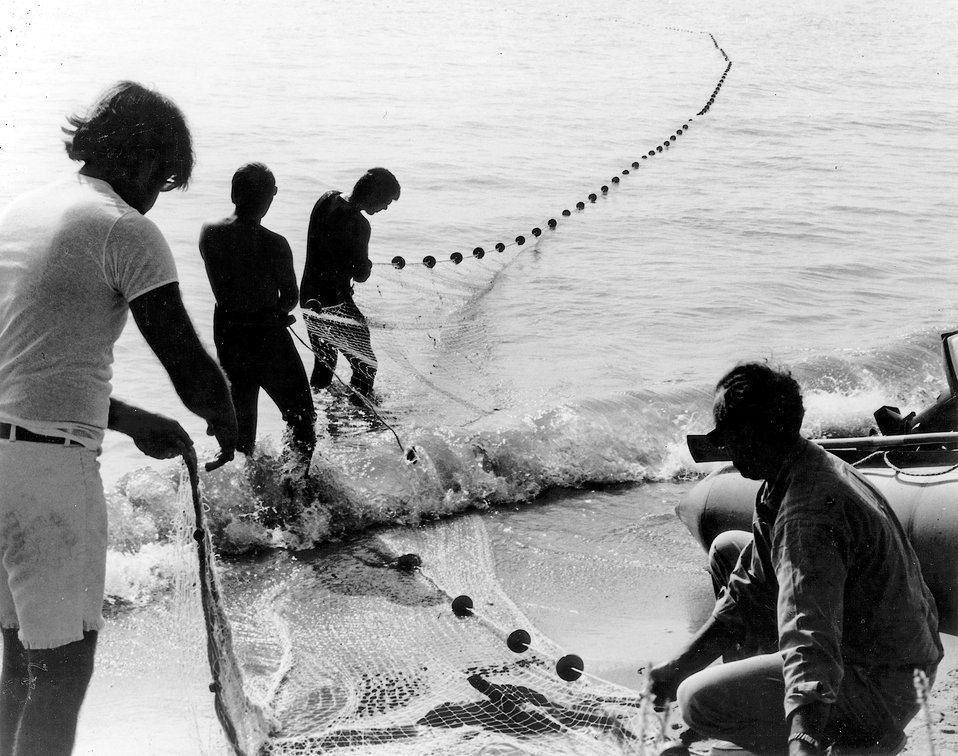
As the waters begin to cool on Lake Michigan large numbers of fish congregate around cooling-water discharges from electric generating stations such as the Wisconsin-Michigan Power Company Point Beach Nuclear Power Station.
c.1973